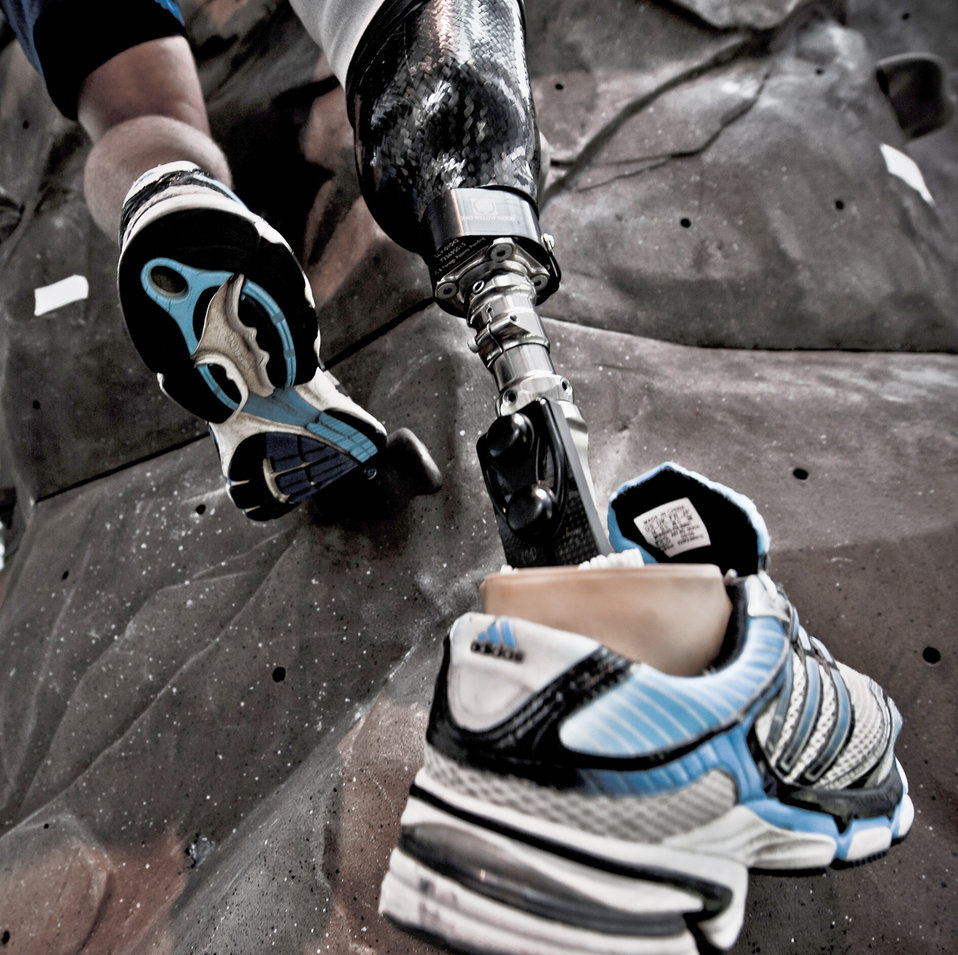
1st Lt Ryan McGuire

1st Lt. Ryan McGuire conquers the rock climbing wall at the Center for the Intrepid as part of his physical therapy session with therapist Alicia White (holding the safety rope) May 25, 2010, in San Antonio. The rehabilitation therapy helped the lieutenant get used to the prosthetic he received after his lower right leg was amputated following a boating mishap in Sept. 2009.